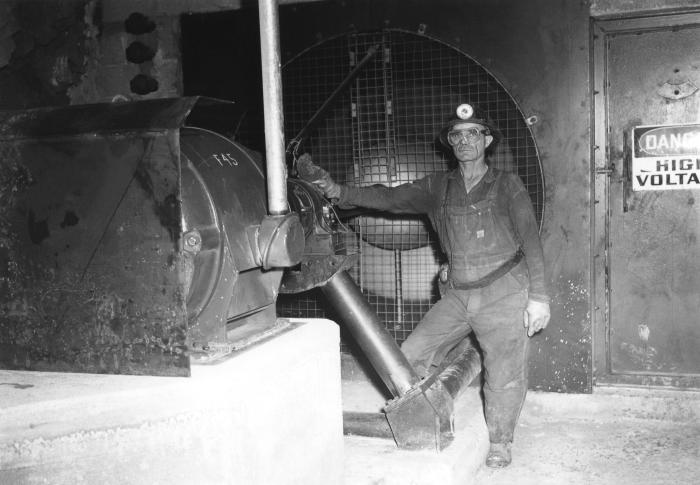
This historical photograph, provided by the Center for Disease Control's (CDC), National Institute for Occupational Safety and Health (NIOSH), depicted the inside of the 'U.S. Smelting, Refining, & Mining Co.' mine shaft in Utah. This mine shaft was located inside the Lark Section, at the bottom of the Yosemite No. 2 Incline B., on the exhaust side. Situated in this image towards the left, was a 125 HP Jeffrey Aerodyne� exhaust fan, which had a 14,000 cfm flow-through capacity. In the close confines of a subterranean mine such as this one, it's critically important that proper air quality be maintained. Note that the miner was wearing a protective hard hat, goggles, and gloves, but no filtered breathing mask was worn; however, the quality of this air cannot be determined from this image. Also note the 'High Voltage' warning sign posted on the door towards the far right.